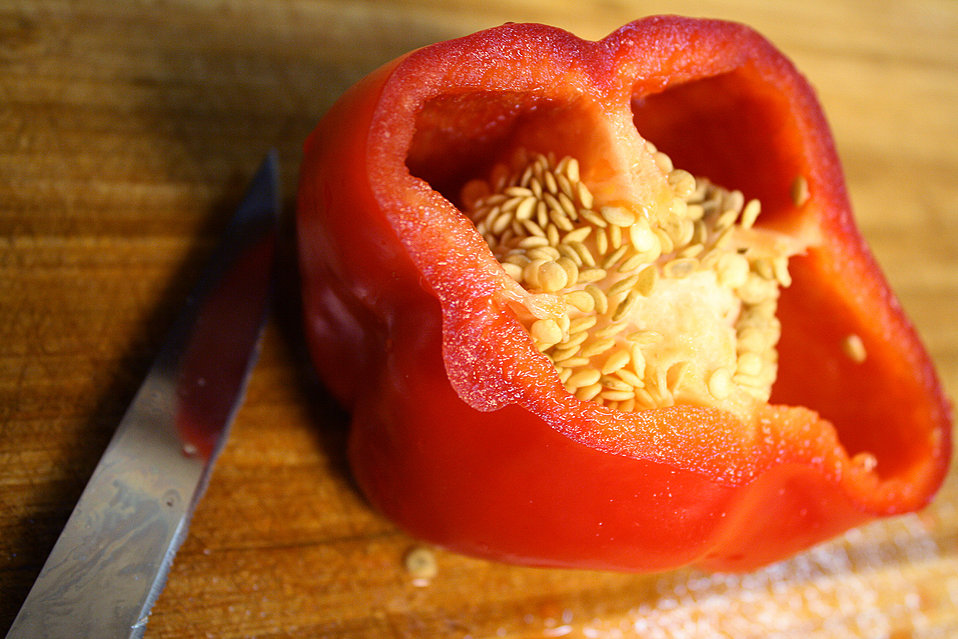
This picture was taken inside a home kitchen, and depicts a halved red bell pepper, Capsicum annuum, set atop a clean, well-worn cutting board. The pepper's core had been exposed revealing numerous heart-shaped seeds, as well as its bright red flesh. Before being cut, this pepper was thoroughly washed with soap, and warm water, removing debris, and surface contaminants.